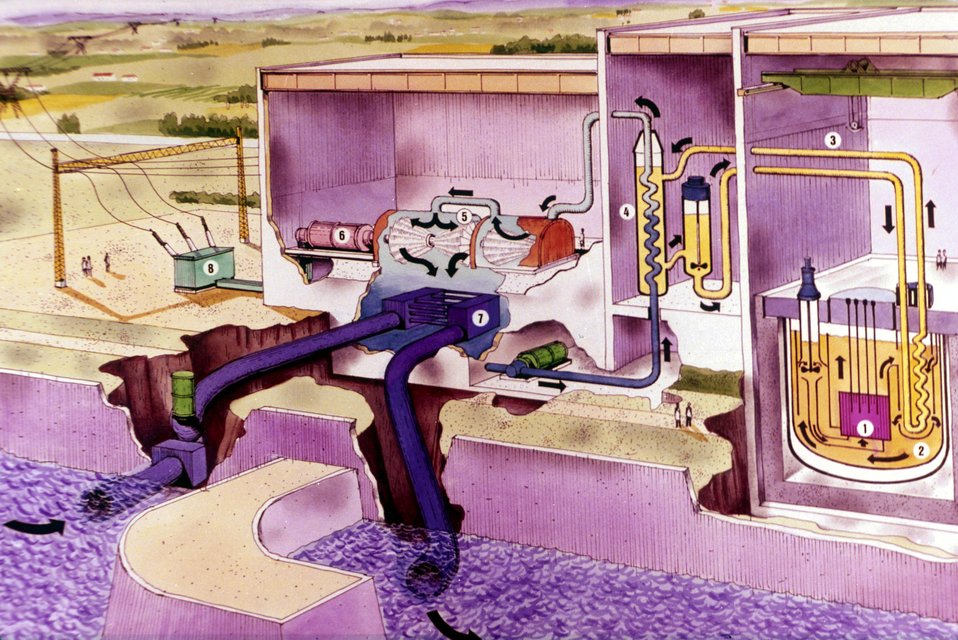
EcorchÐ d'une centrale µ neutrons rapides (surrÐgÐnÐrateur).